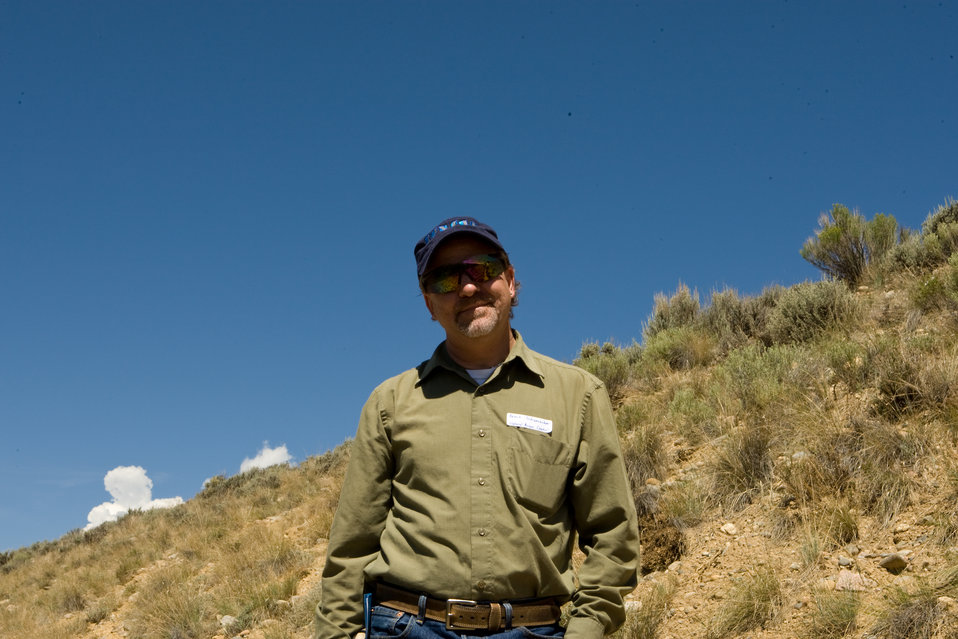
Colorado Rare Plant Conservation Initiative

The Colorado Rare Plant Conservation Initiative (RPCI) is a partnership of 23 statewide and regional agencies, private organizations, and academic institutions working to conserve 121 rare plants in Colorado. As part of these efforts the group developed the Colorado Rare Plant Conservation Strategy, developed Best Management Practices to reduce energy development impacts, addressed climate change, and developed focused strategies for the conservation of individual species at eight priority landscapes. The group has also worked to coordinate volunteer efforts for plant conservation across the state.